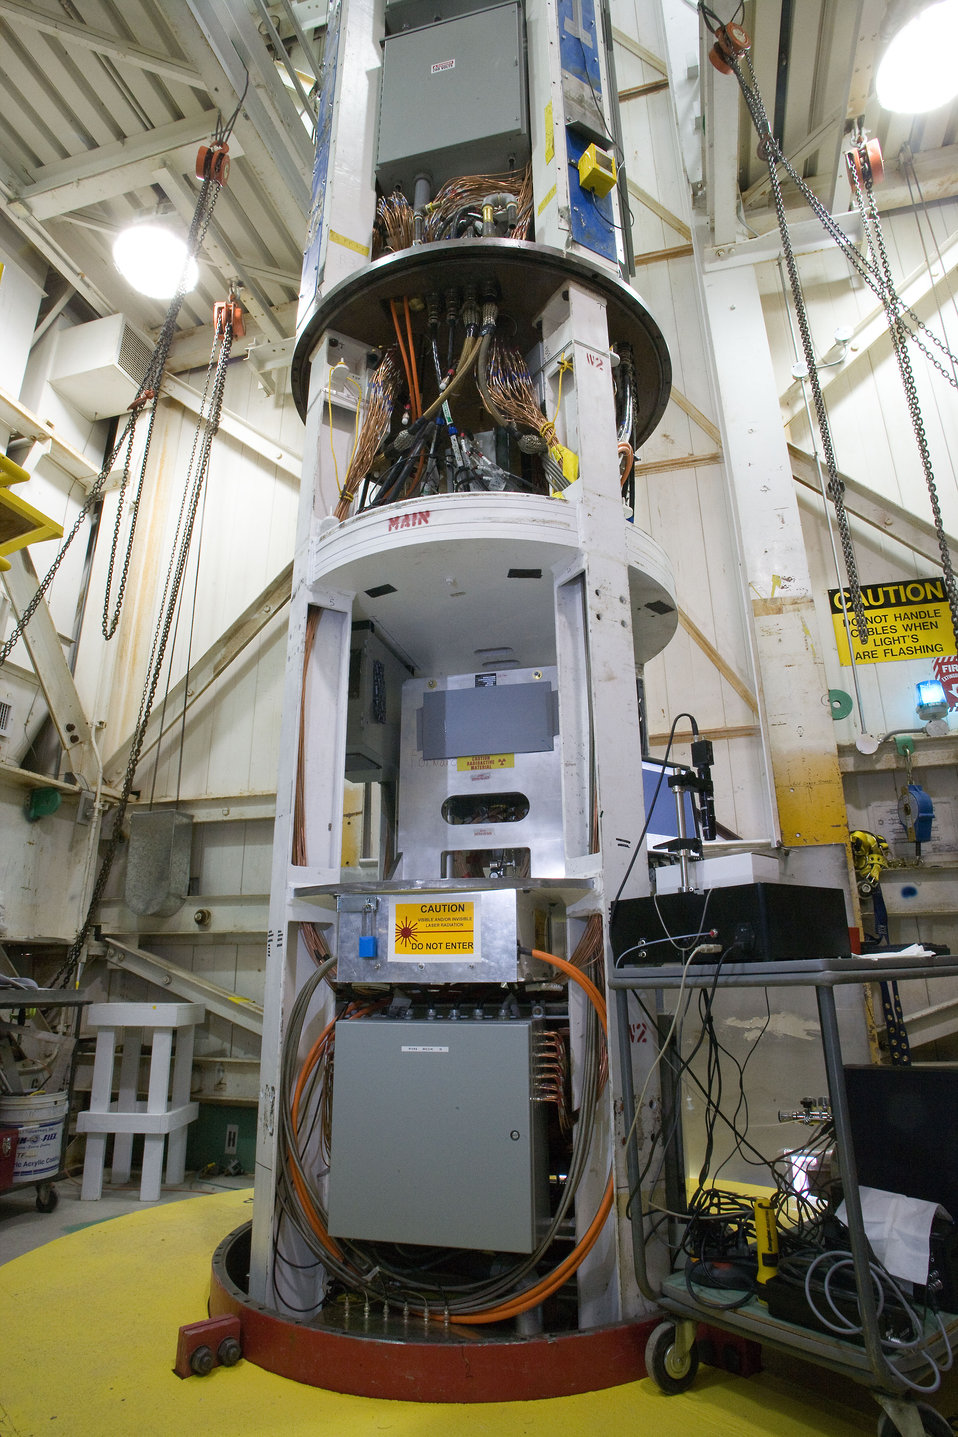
Los Alamos National Laboratory conducted Unicorn, a subcritical experiment at the Nevada Test Site..

LANL conduct the experiment to gather scientific data that provides crucial information to maintain the safety and reliability of the national's nuclear weapons without having to conduct underground nuclear test.